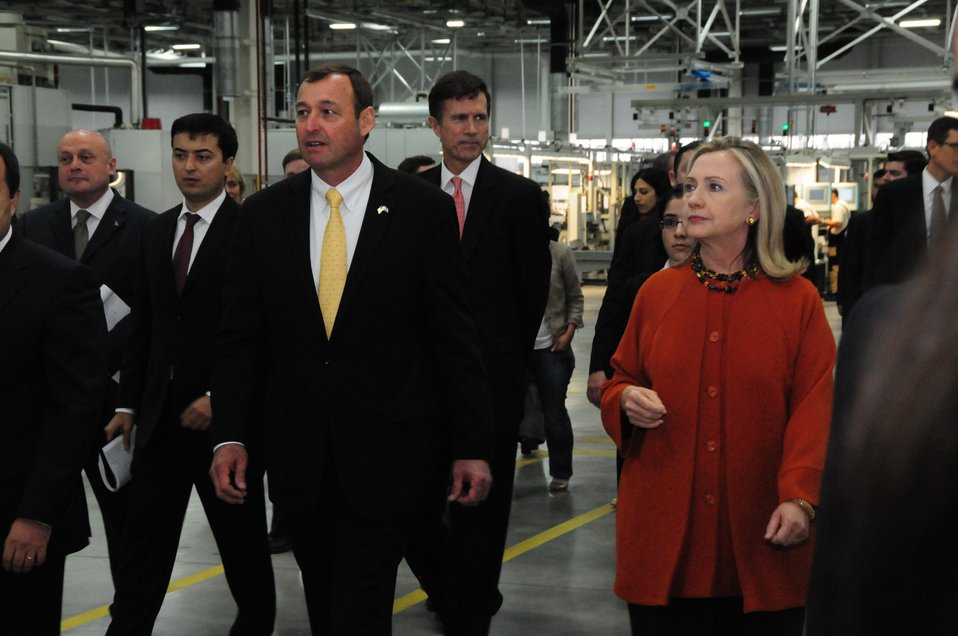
GM Uzbekistan General Director Spendel Gives Secretary Clinton a Tour of the GM Factory

General Motors (GM) Uzbekistan General Director Juergen Spendel, center; leads U.S. Secretary of State Hillary Rodham Clinton, right; and members of the U.S. and Uzbek delegations on a tour of the GM Powertrain factory in Tashkent, Uzbekistan, on October 23, 2011.